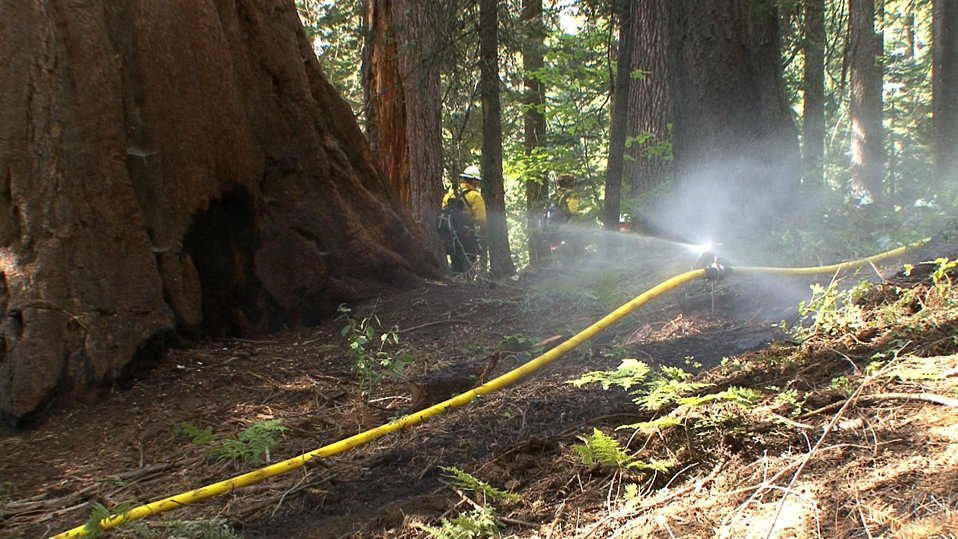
Sprinklers are placed around the perimeter of the Merced and Tuolumne Groves of Giant Sequoias in an effort to protect the big trees should the Rim Fire advance on the groves. The Rim Fire in the Stanislaus National Forest near in California began on Aug. 17, 2013 and is under investigation. The fire has consumed approximately 149, 780 acres and is 15% contained.